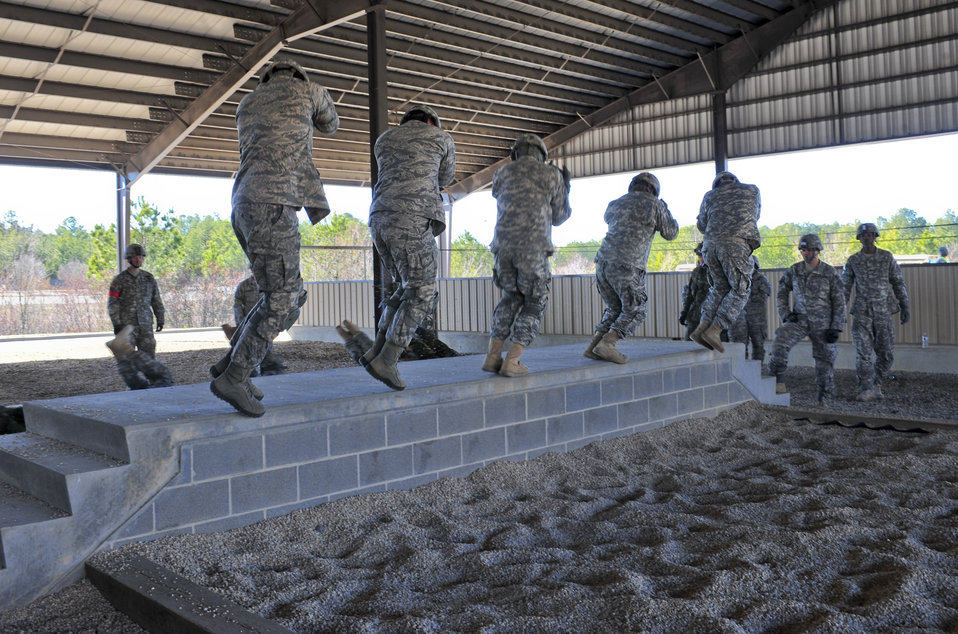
Airmen with the 824th Base Defense Squadron along with Soldiers attached to Headquarters and Headquarters Company, 3rd Brigade Special Troops Battalion, 3rd Brigade Combat Team, 82nd Airborne Division, practice parachute landing training before their jump during Joint Operations Access Exercise 12-01 in Pope Army Airfield, N.C., Feb. 12, 2012. This training provides airborne members with safety awareness during their static line jumps.